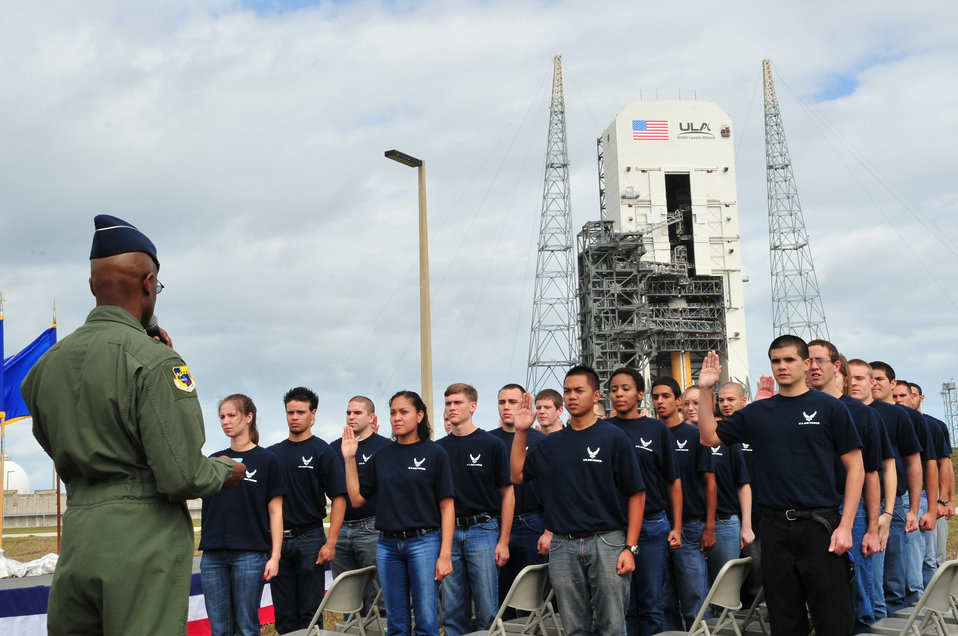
General conducts mass enlistment

Brig. Gen. Edward L. Bolton Jr. inducts 40 Air Force recruits into the Delayed Entry Program Feb. 4, 2010 at Cape Canaveral Air Force Station, Fla. The swearing-in took place in front of a Delta IV being readied for launch. General Edward is the 45th Space Wing Commander.